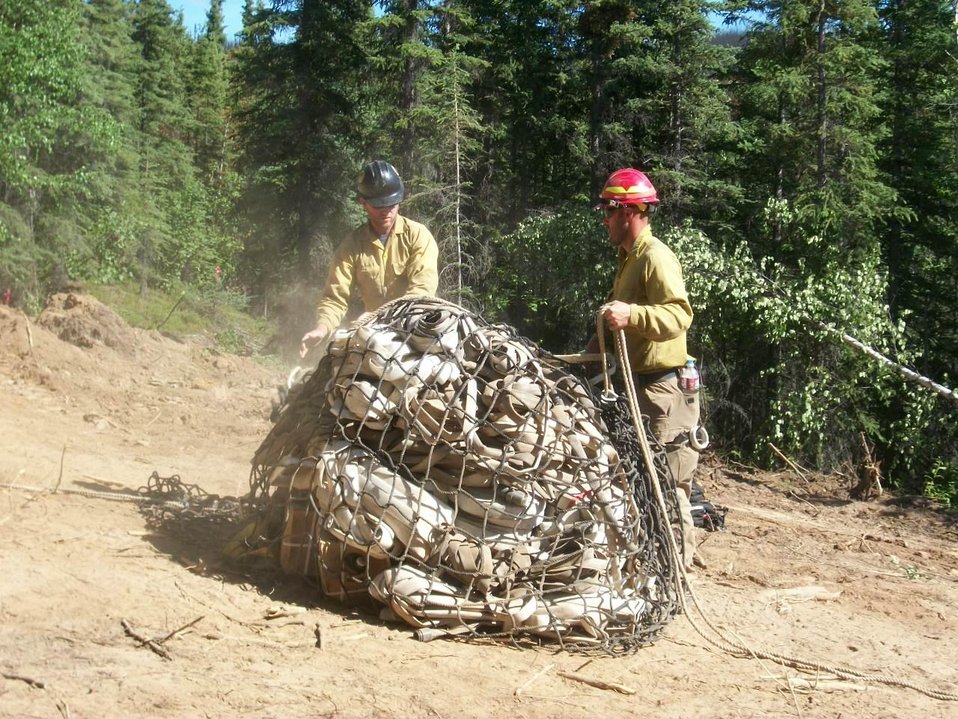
Fire gear is flown into remote areas of the Moon Lake Complex Fires in Tok, AK. The Moon Lake Complex Fires consists of 2 fires, Moon Lake Fire and Tetlin Junction Ridge Fire, along the Alaska and Taylor Highways near Tok, AK. Lightning strikes on Jun. 25, 2013 caused the fires, which have consumed over 49, 959 acres.